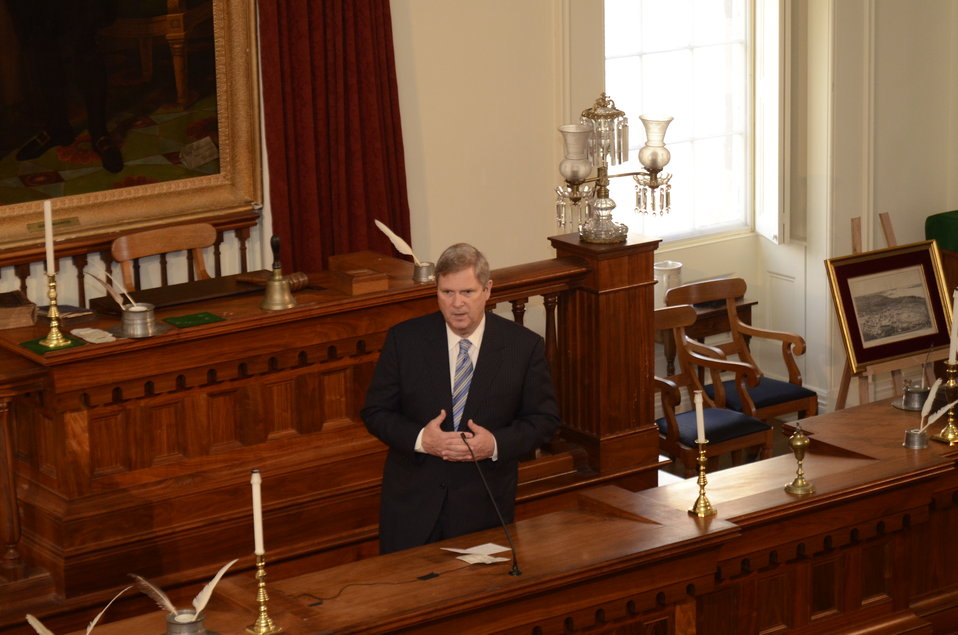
Agriculture Secretary Tom Vilsack speaking at the Old State Capitol in Springfield, IL, to commemorate the 150th Anniversary of the creation of the U.S. Department of Agriculture on Wednesday, November 2, 2011.